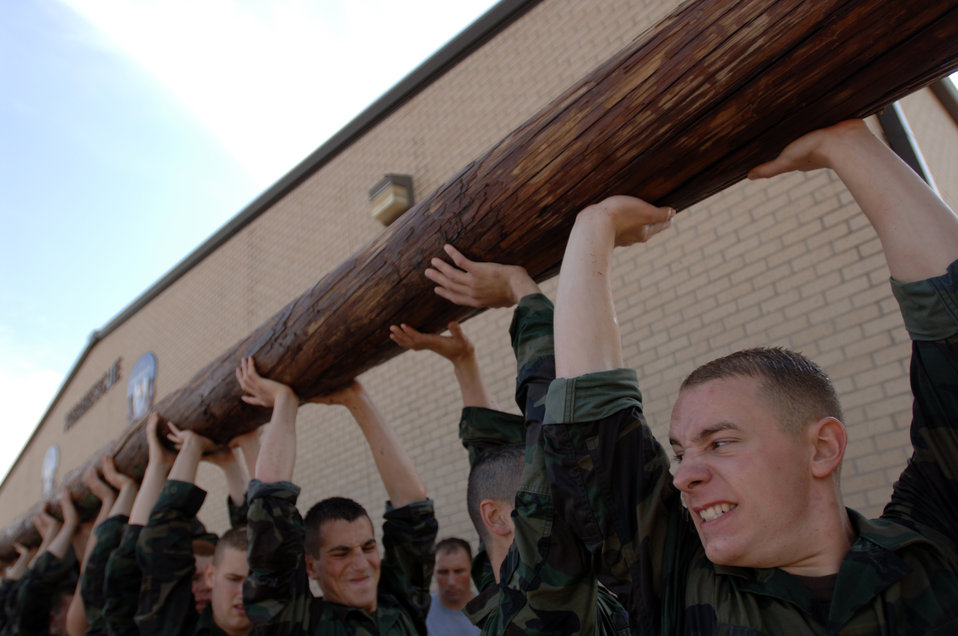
'That others may live'

Instructors soak Airman 1st Class Michael Lauria and fellow trainees as they carry a log during pararescue indoctrination training at Lackland Air Force Base, Texas, on Thursday, April 6, 2006. The 10-week indoctrination training is the first hurdle of intense physical and mental training for pararescue hopefuls. It prepares them for the 12 to 15 months of extreme training they must pass to become Air Force pararescue members.